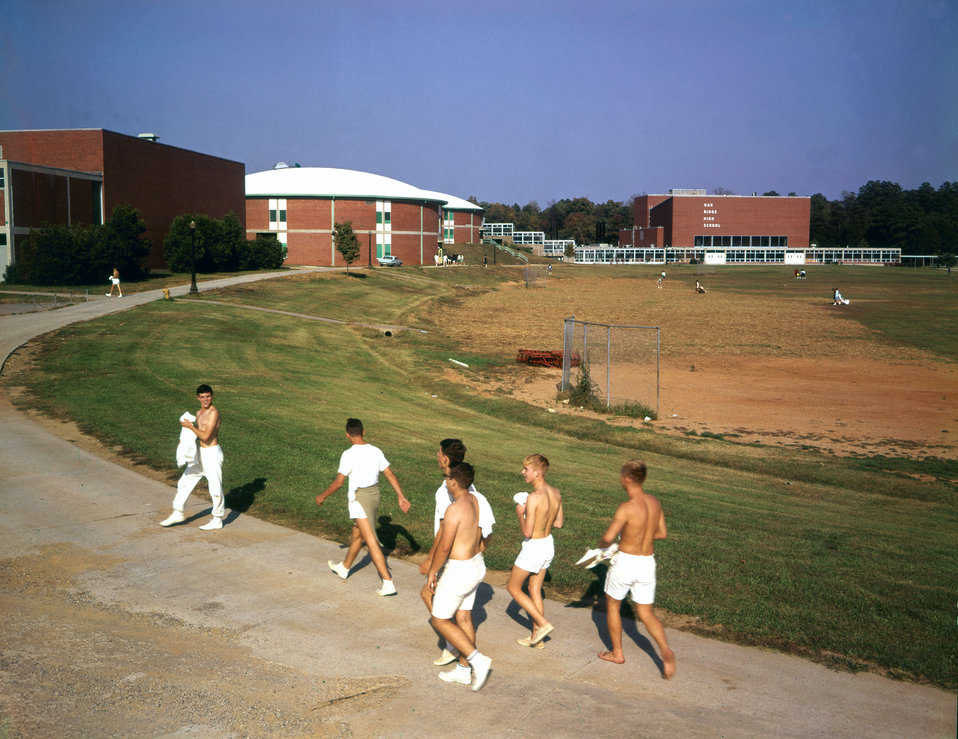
Oak Ridge High School

DOE photo by Ed Westcott 1960s Oak Ridge Tennessee